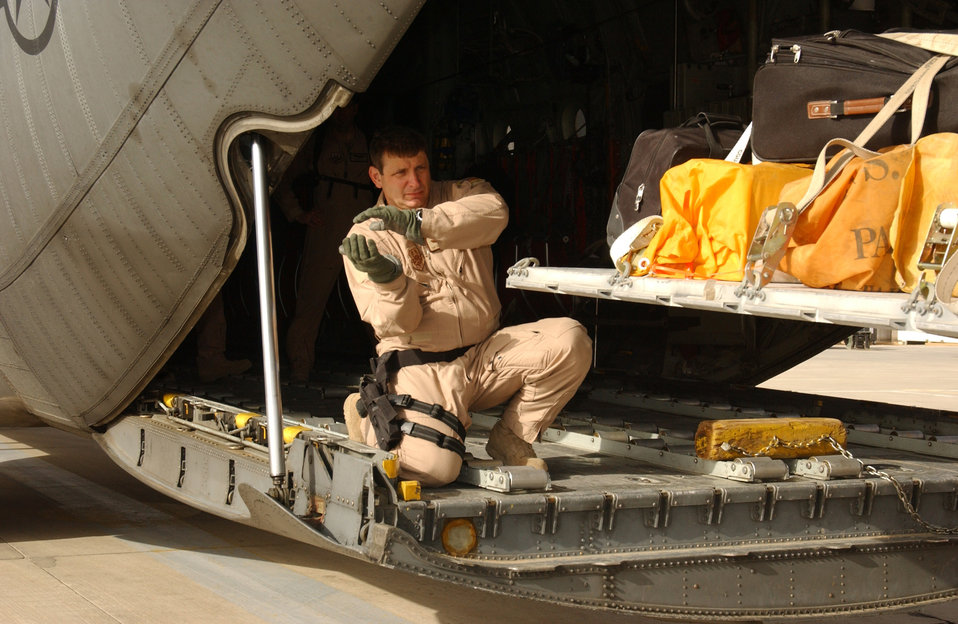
C-130s keep convoys out of Sunni Triangle

Loadmaster Tech. Sgt. Joe Van Benthuysen helps guide a pallet onto the ramp of a C-130 Hercules. He is with the 777th Expeditionary Airlift Squadron.